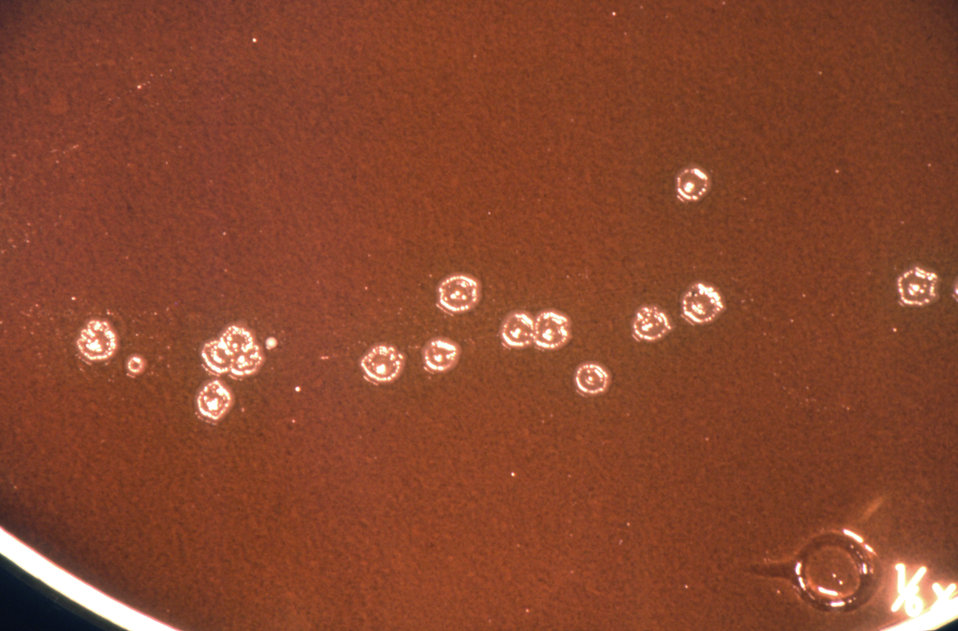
This image depicts a Petri dish culture plate that had been stocked with Thayer-Martin medium, and inoculated with Neisseria gonorrhoeae bacteria. The bacterial organisms grew umbilicated,, i.e., concave in their center, colonies, which is an atypical morphologic characteristic for N. gonorrhoeae colonies. However, when these organisms were subcultured, which means regrown in another Petri dish, the organisms grew colonies of normal morphology.